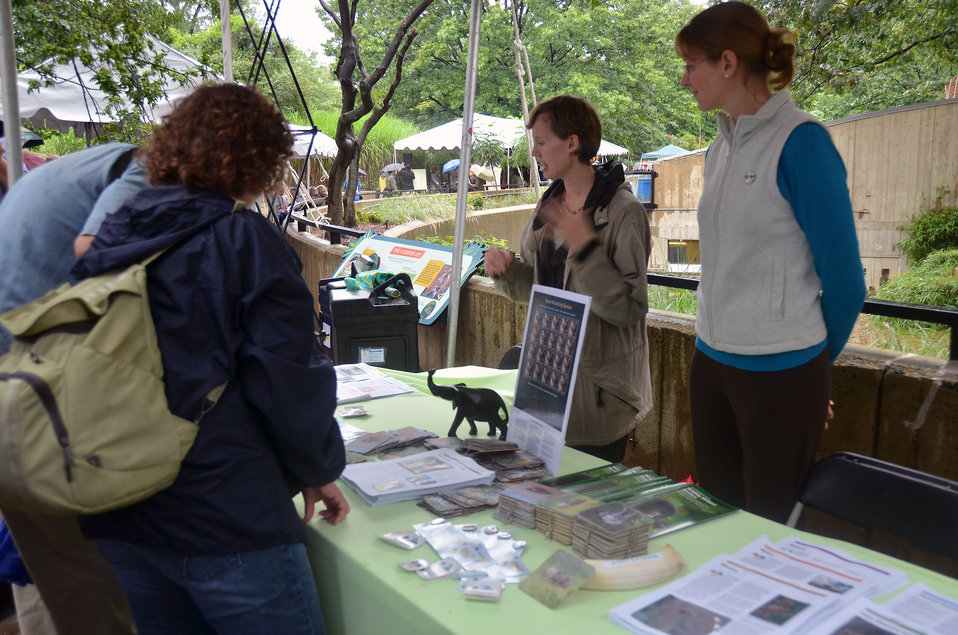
Save Vanishing Species Stamp First Day of IssueC 0138